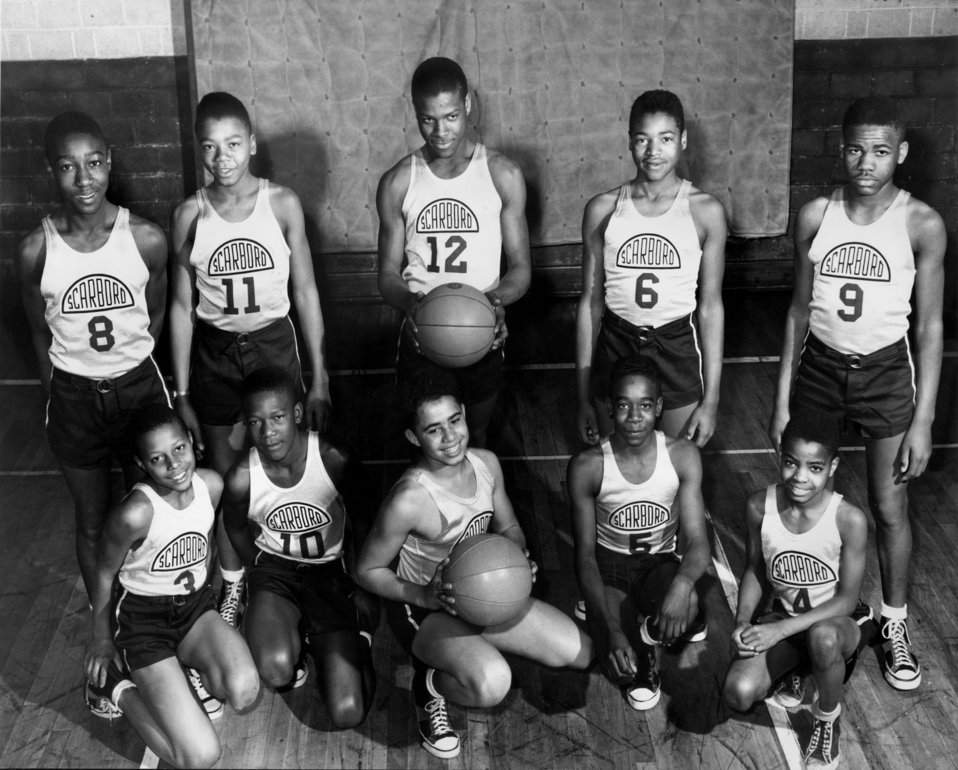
Scarboro boys basketball team Oak Ridge

4227 DOE photo by Ed Westcott
Scarboro boys basketball team Oak Ridge Tennessee 1/1948